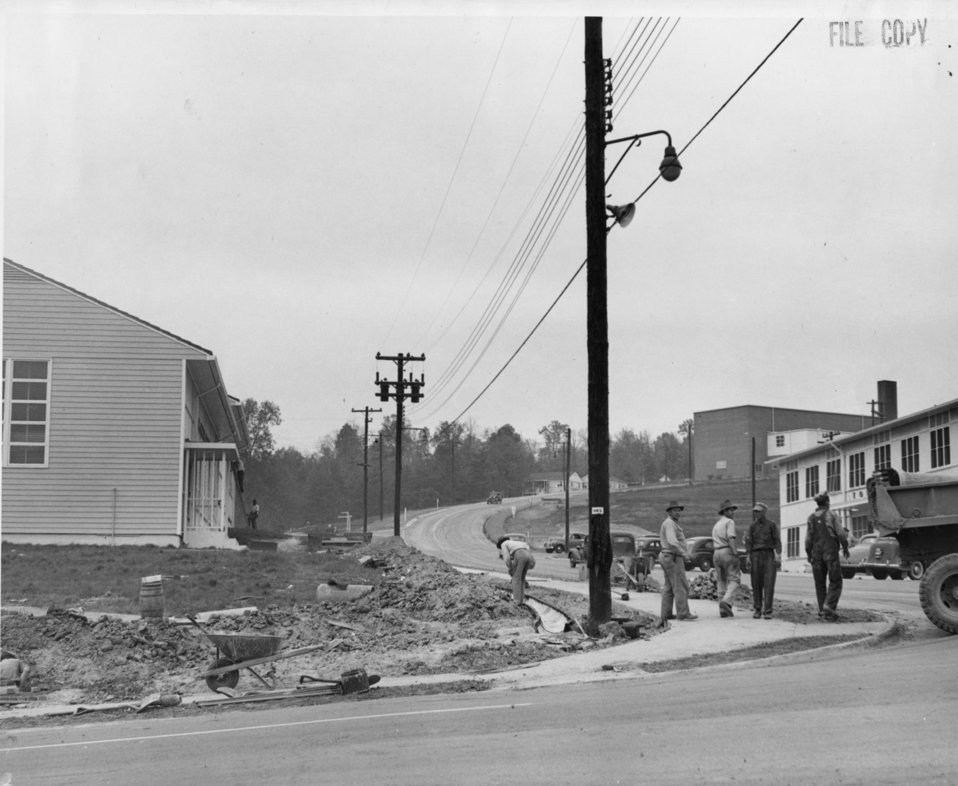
Construction activity at Oak Ridge